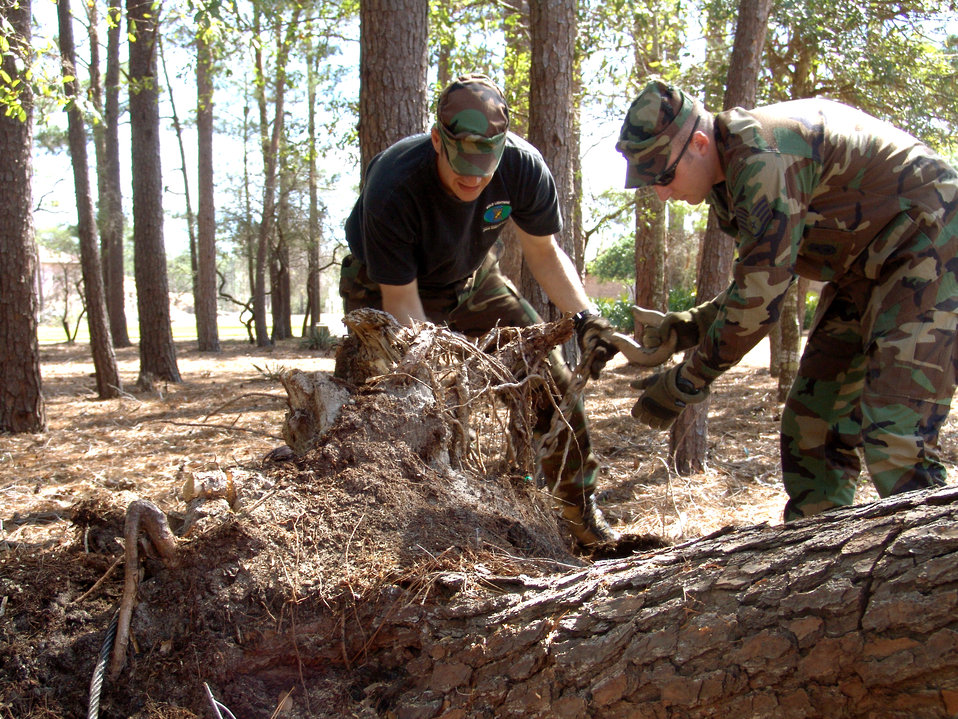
Eglin Airmen go to war with stumps, trees

SHALIMAR, Fla. -- Staff Sgts. Jon Farr (left) and Andrew Shone hook the wench of a five-ton truck to a stump. The Airmen and other instructors with the 96th Ground Combat Training Squadron at nearby Eglin Air Force Base cut up fallen trees and pulled 18 stumps, saving the village more than $2,000. Hurricane Ivan downed hundreds of trees on the property and caused more than $300,000 in damage.